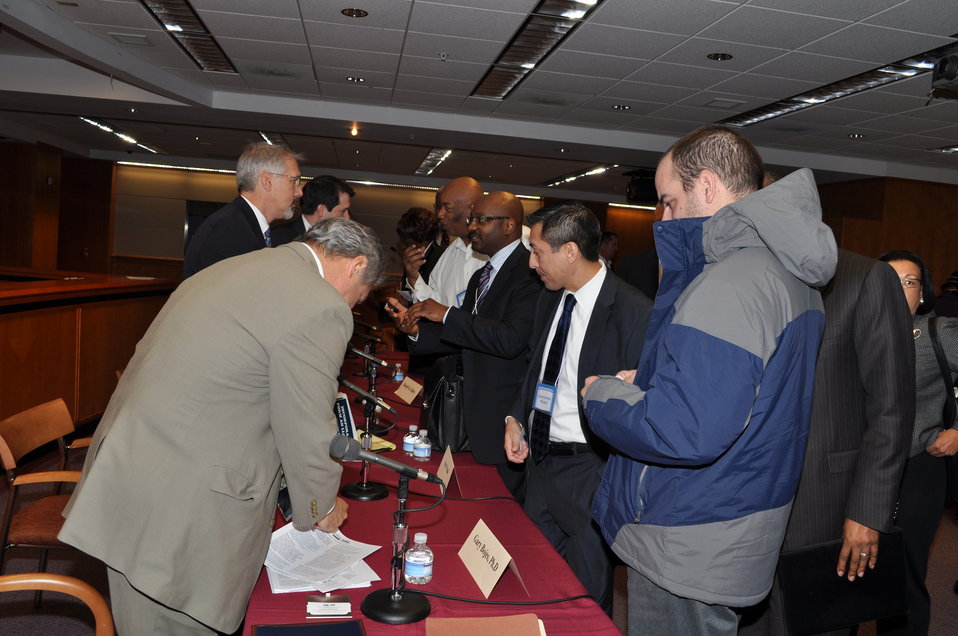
Capitalization Strategies

Workshop for small, minority and women owned businesses. Hosted by the Office of Communications Business Opportunities